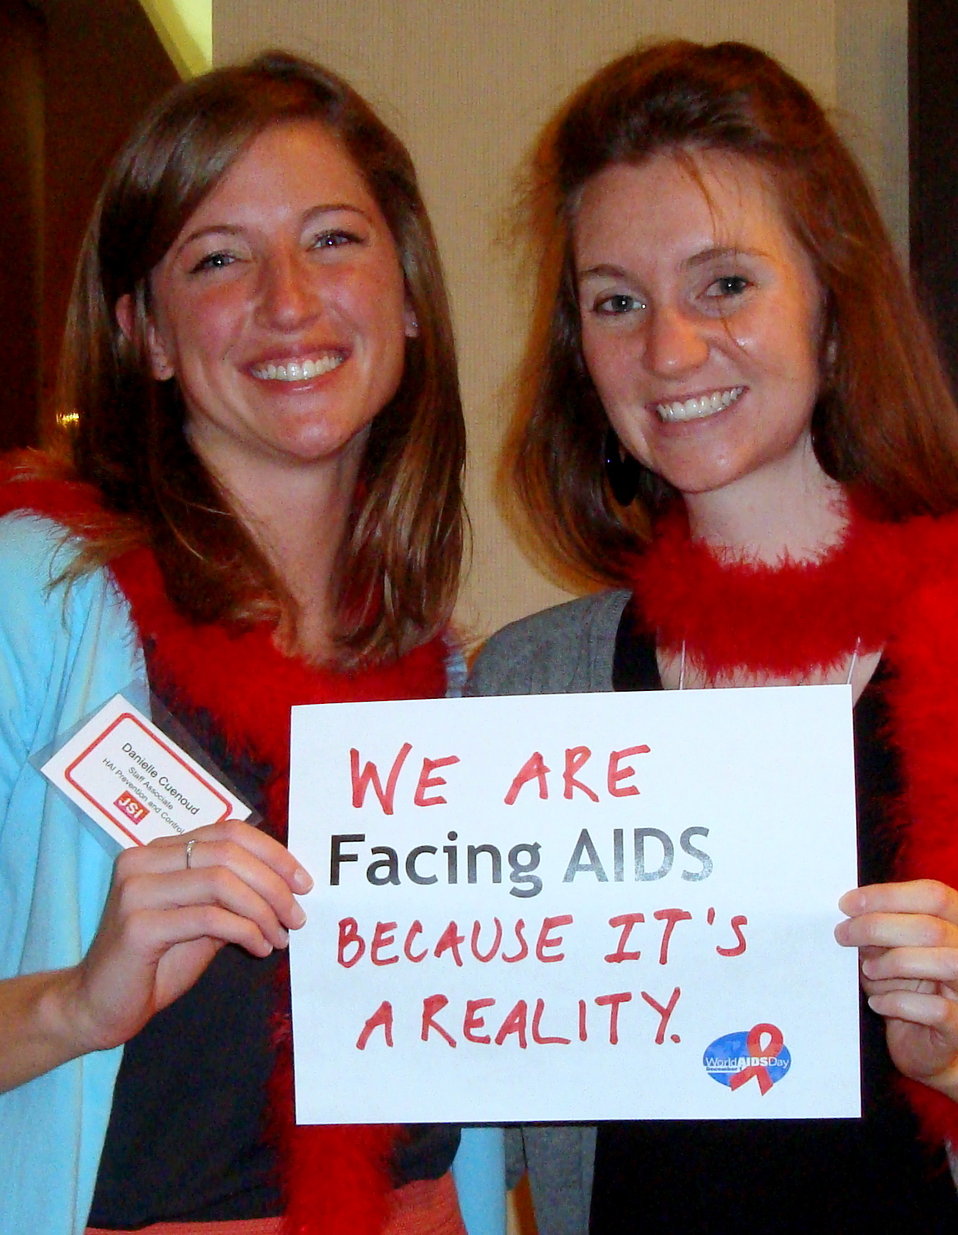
FacingAIDSCampaign 021